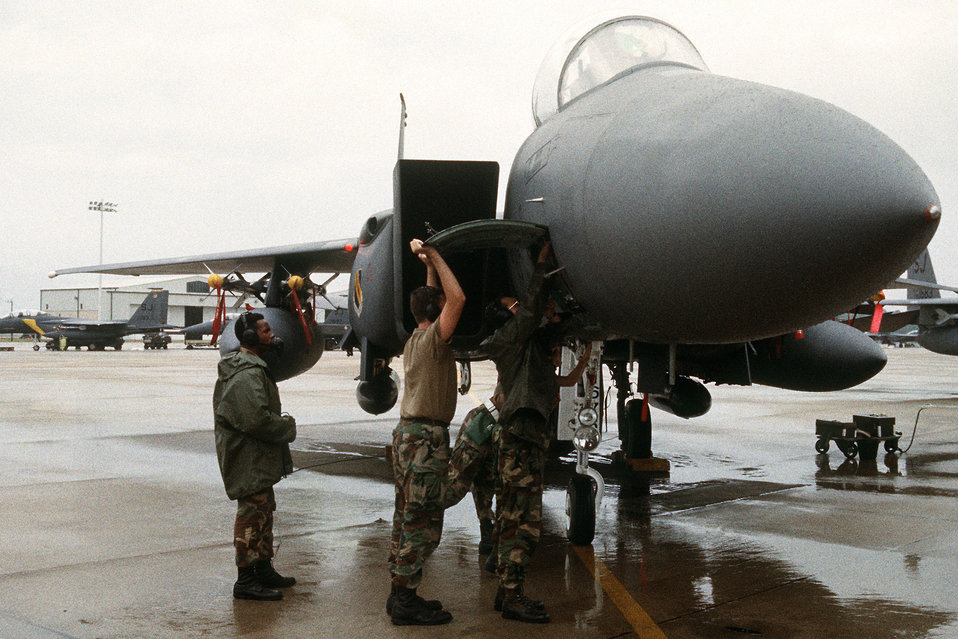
Preflight check on an F-15E Eagle

1990's -- Ground crew members perform a preflight check on an F-15E Eagle aircraft of the 4th Tactical Fighter Wing prior to its deployment to Saudi Arabia in support of Operation Desert Shield. The aircraft is equipped with AIM-9 Sidewinder missiles.